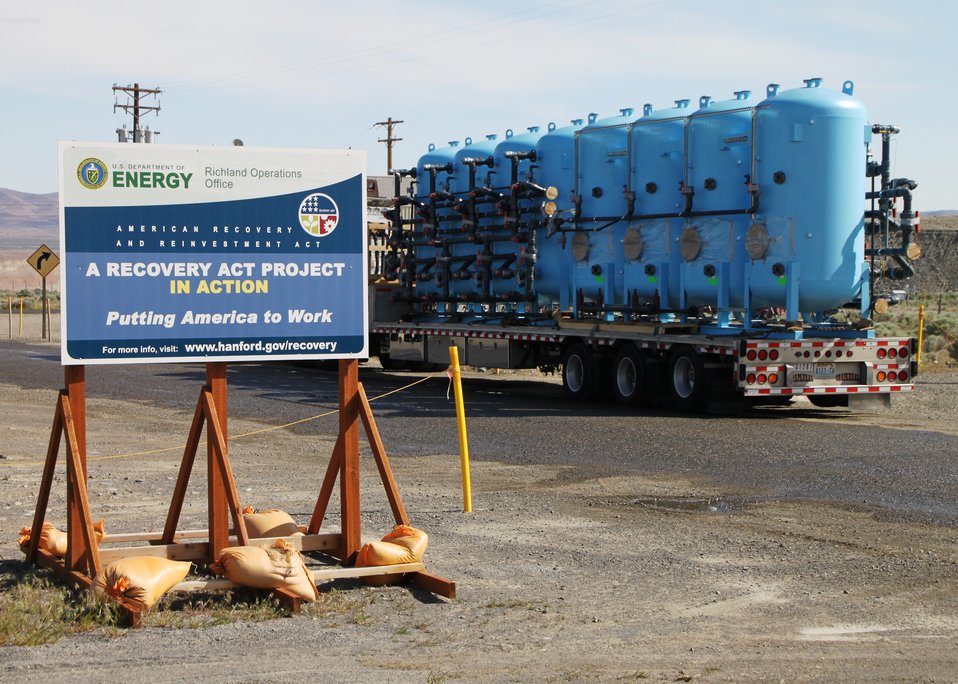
Next Generation of Treatment

Ion exchange tanks shown here will be installed in the buildings that will make up the 100-DX Groundwater Treatment System at the Hanford Site. The tanks will house the innovative ion exchange resin with increased capacity to remove hexavalent chromium contamination from the groundwater.